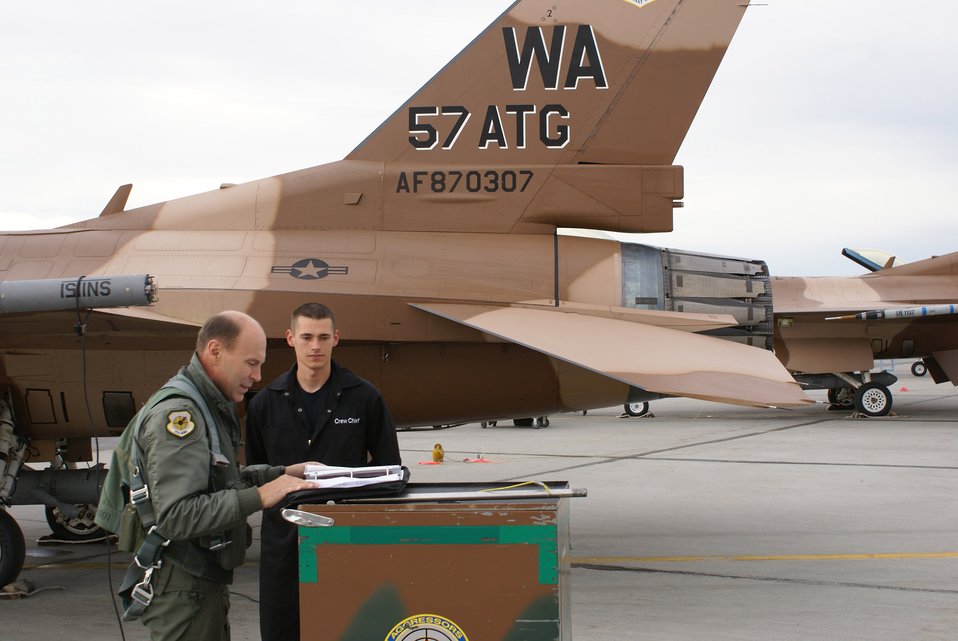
Pilots get taste of combat during Red Flag-Alaska

Brig. Gen. William Rew, 57th Wing commander and Senior Airman Richard Kalinowski, 57th Aircraft Maintenance Squadron crew chief, from Nellis Air Force Base, Nev., conduct post-flight checks June 7 on the flightline. General Rew flew as an aggressor during Red Flag-Alaska 07-2 at Eielson AFB. The exercise is designed to give young pilots and aircrew their first 10 combat sorties using the walk-crawl-run approach, stepping up the level of threat and level of difficulty.